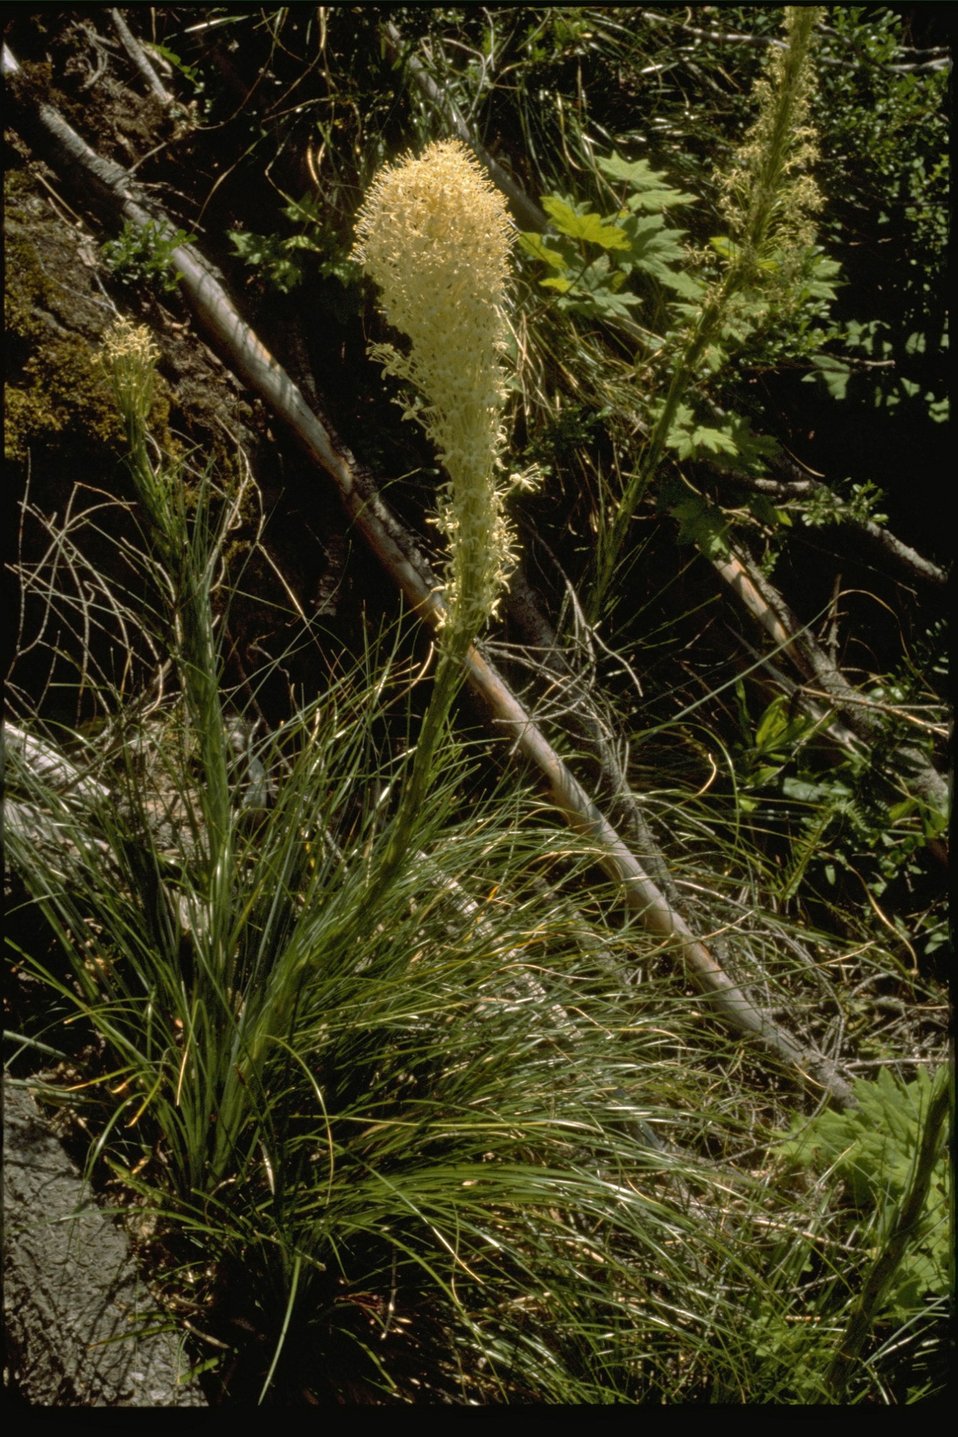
Bear Grass